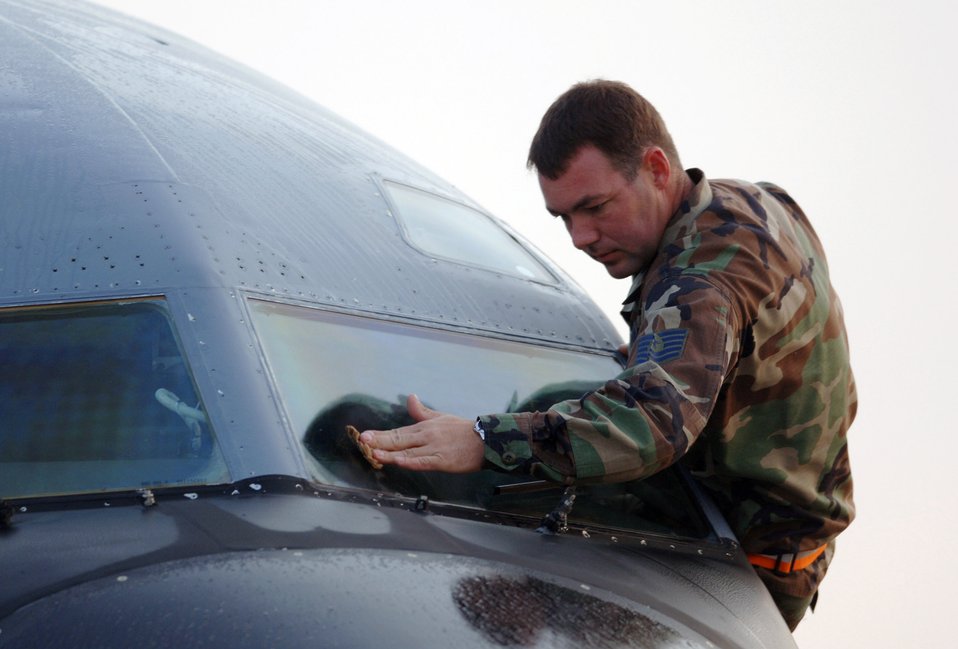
Keeping Stratotankers flying

YOKOTA AIR BASE, Japan (AFPN) -- Crew chief Tech. Sgt. Julian Christian cleans the windshield of his KC-135 Stratotanker before an exercise Cope North 05 morning sortie. Cope North is a bilateral exercise designed to enhance U.S. and Japanese air operations. It gives pilots from both countries opportunities to conduct training in air combat tactics, electronic combat and airborne air control. Sergeant Christian is with the 718th Aircraft Maintenance Squadron here.